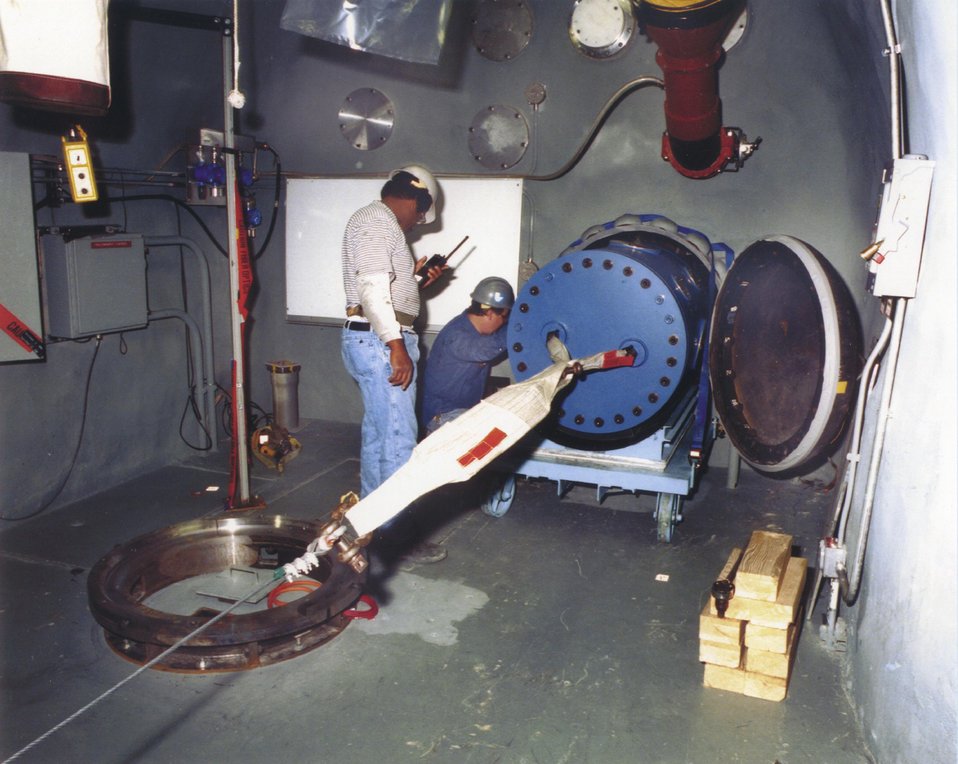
THE STEEL CONFINEMENT VESSEL IS PULLED THROUGH THE ENTRYWAY INTO THE EXPERIMENTAL ALCOVE.

EXPLOSIVE TESTS ARE CONDUCTED DEEP UNDER THE NEVADA DESERT BY LAWRENCE LIVERMORE NATIONAL LABORATORY PHYSICISTS AND ENGINEERS. THE SUBCRITICAL EXPERIMENTS ARE AIMED AT PROVIDING IMPORTANT DATA TO EXPERTS WATCHING OVER THE NATION'S NUCLEAR STOCKPILE.